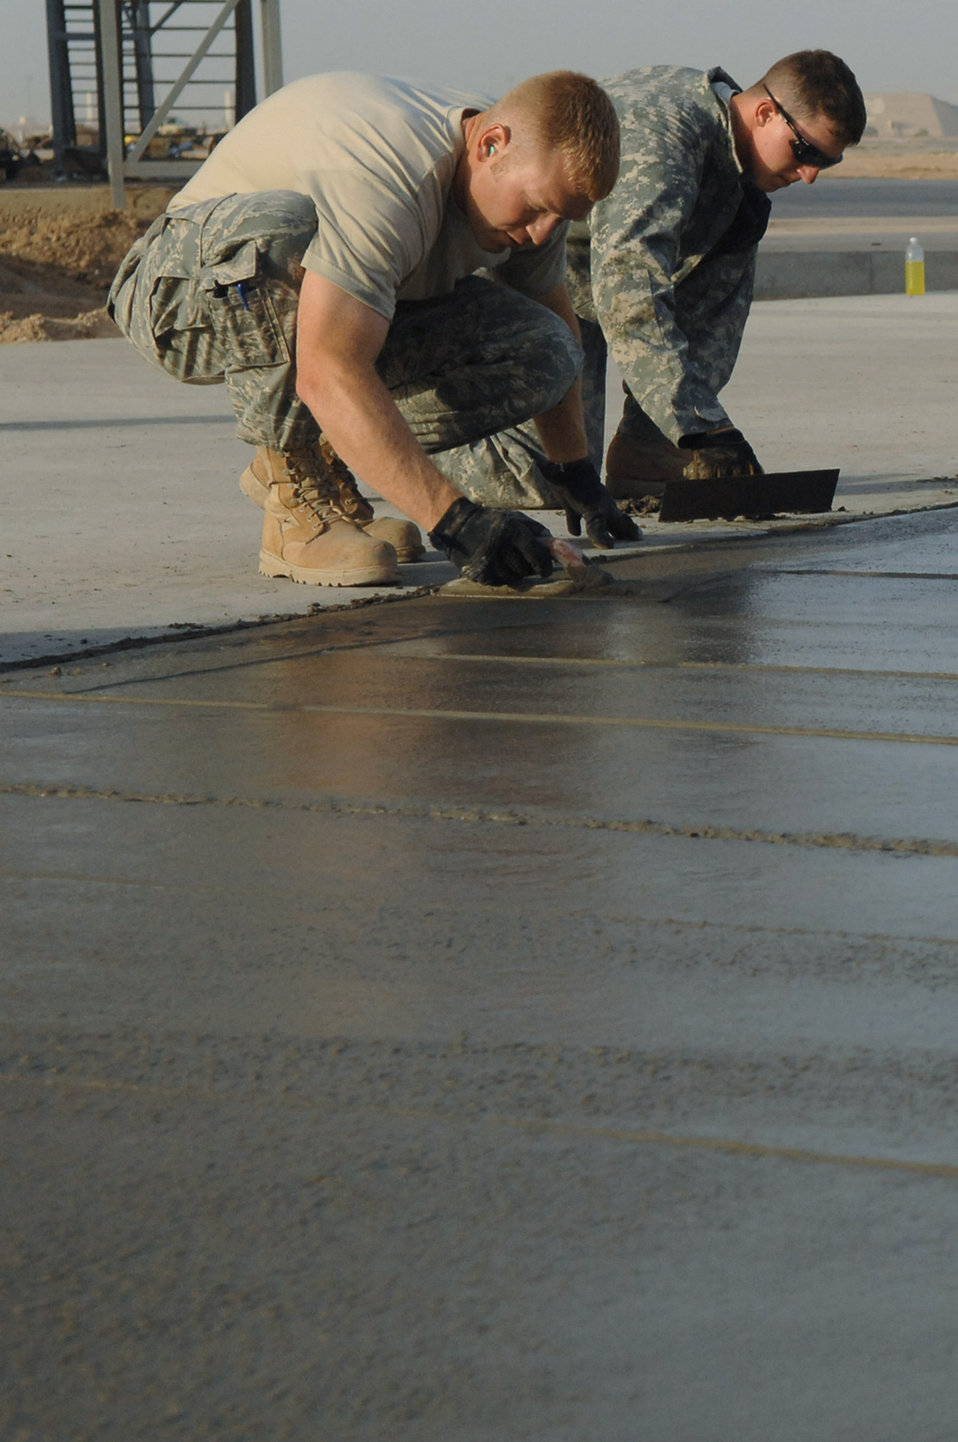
'Dirt Boyz' pave way for aircraft, Airmen

Staff Sgts. Rohde Orlin and Ryan Ward smooth and edge the side of a concrete pad May 13 at Balad Air Base, Iraq. Sergeant Orlin is deployed from Ellsworth Air Force Base, S.D.; and Sergeant Ward is deployed from McConnell AFB, Wash. Both are 332nd Expeditionary Civil Engineer Squadron heavy equipment operators.